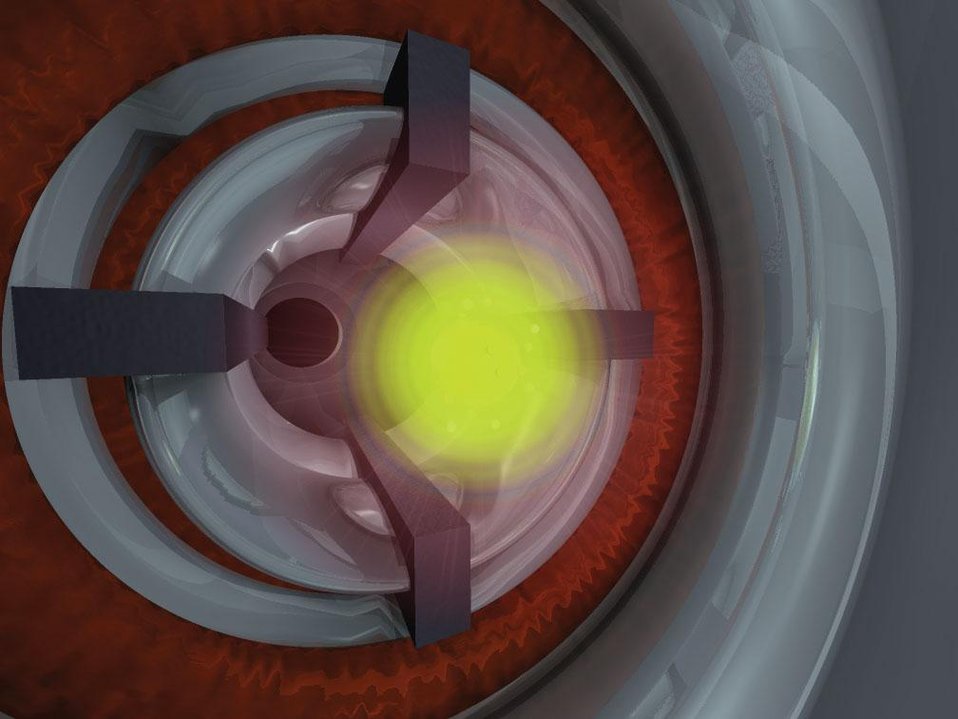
SIMULATION OF THE MOMENT OF COLLISION BETWEEN AN ACCELERATED CALCIUM-48 ION AND AN AMERICIUM-243 TARGET ATOM.

SCIENTISTS AT DOE'S LAWRENCE LIVERMORE NATIONAL LABORATORY, IN COLLABORATION WITH RESEARCHERS FROM THE JOINT INSTITUTE OF NUCLEAR RESEARCH (JINR) IN RUSSIA, HAVE DISCOVERED THE TWO NEWEST SUPER-HEAVY ELEMENTS, ELEMENT 113 AND ELEMENT 115. IN THESE DECAY CHAINS, ELEMENT 113 IS PRODUCED VIA THE ALPHA DECAY OF ELEMENT 115. THE EXPERIMENTS PRODUCED FOUR ATOMS EACH OF THE TWO ELEMENTS THROUGH THE FUSION REACTION OF CALCIUM-48 NUCLEI IMPINGING ON AN AMERICIUM-243 TARGET.